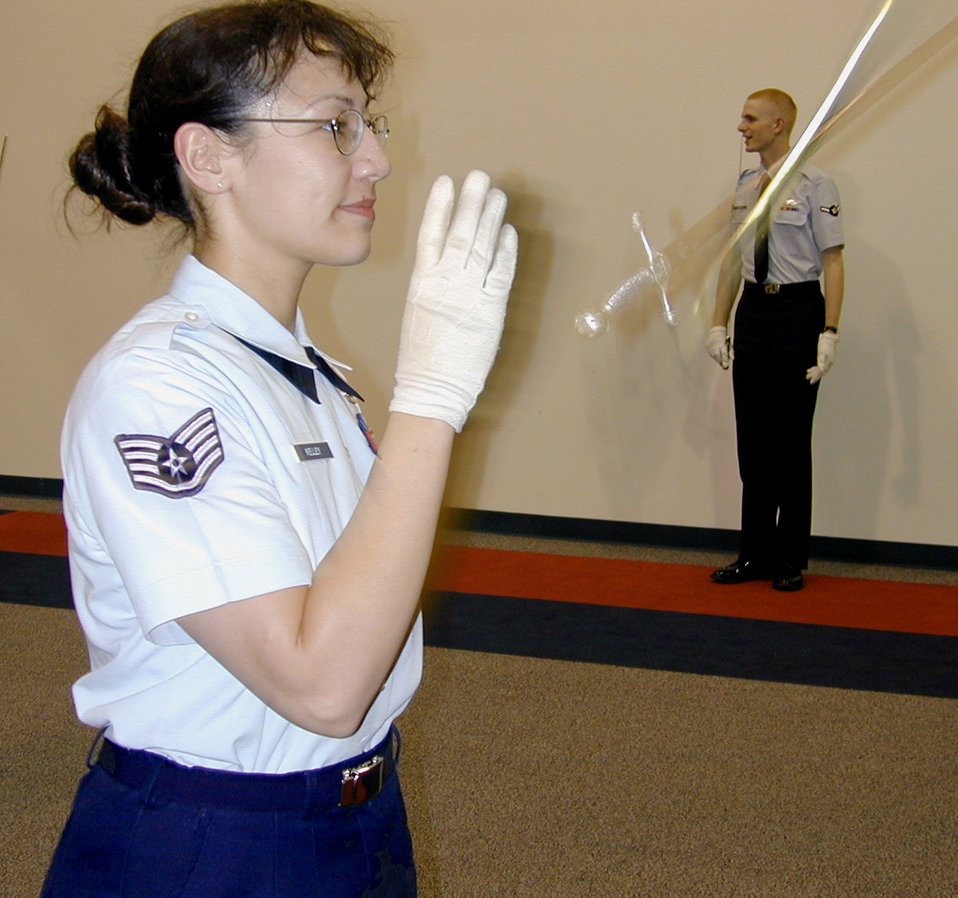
Sabre practice

GUNTER ANNEX, Ala. (AFPN) -- Staff Sgt. Jennifer Kelley practices twirling a saber. Sabre Drill Team members here practice rigorously for intricate maneuvers required during a performance.